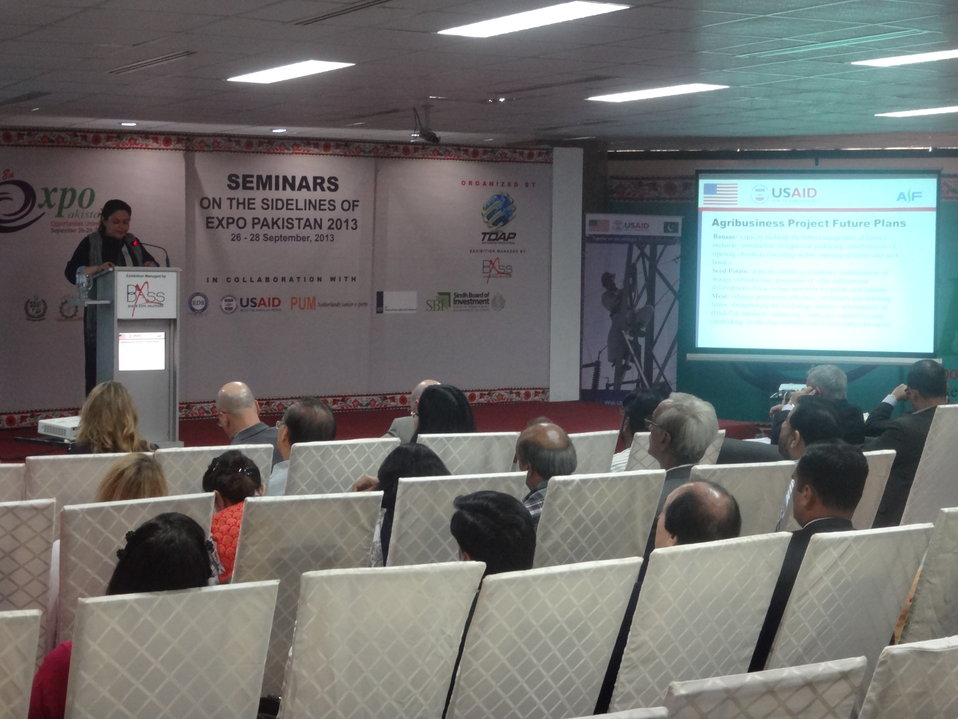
The Agribusiness Project, Presentation at Conference, TDAP Expo, Karachi, September 27, 2013 (10)